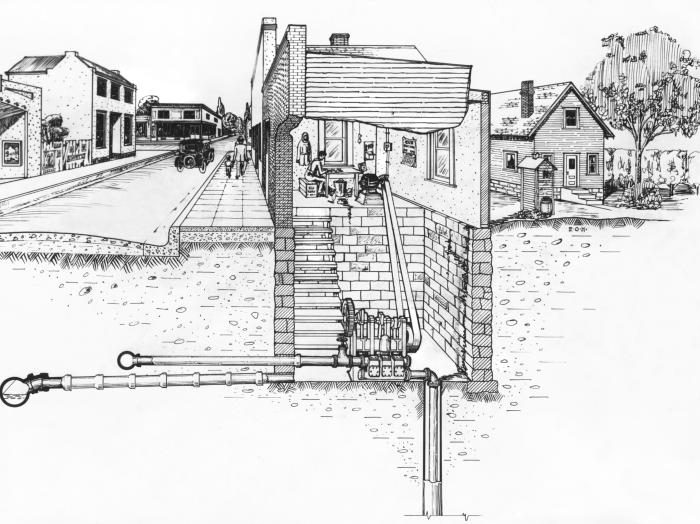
This historic 1922 drawing depicted an improperly constructed 'drilled' well for municipal use. An obvious hazard was the location of the privy to the right of the station, which was shown draining downhill toward the pump house. It also revealed a dangerous arrangement of the suction-type pump, which had been located in a pit that drained overflow to a sewer. However, with this configuration, there was the potential for contamination should the sewer ever back up, due to flooding.